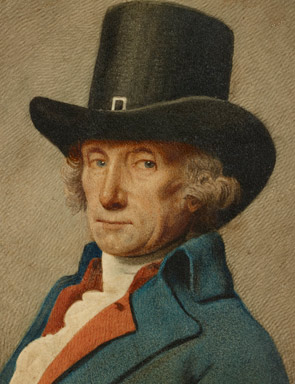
George Stubbs, Portrait of Warren Hastings, c. 1791